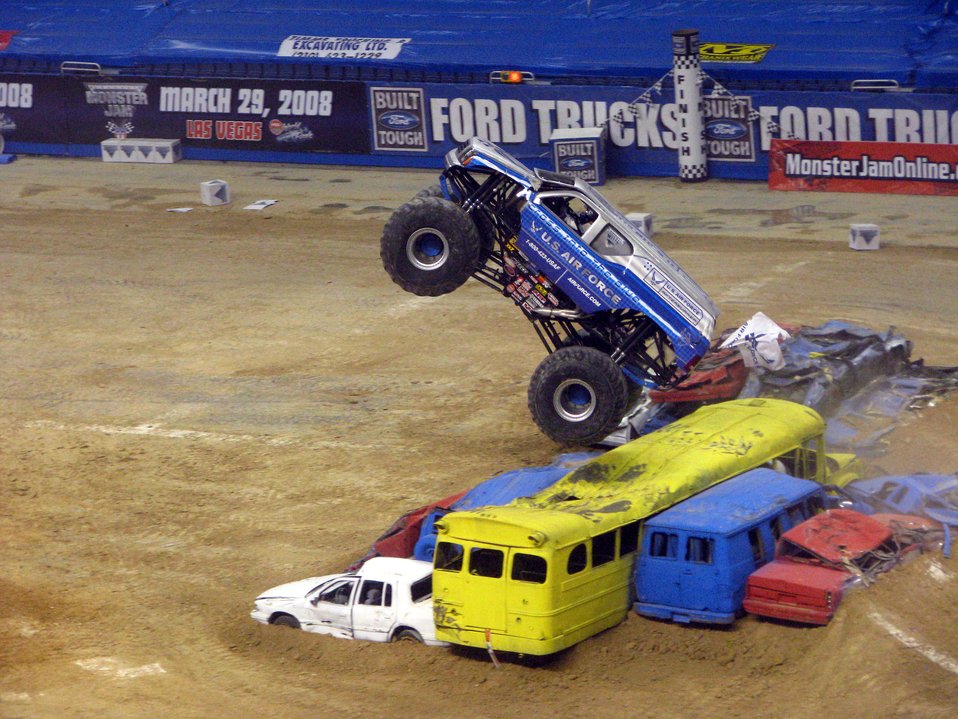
Afterburner steals the show

Afterburner, the Air Force's monster truck, goes airborne while dazzling the crowd Jan. 13 during the freestyle show at the 2008 San Antonio Monster Jam. Afterburner, an Air Force recruiting tool, is driven by Damon Bradshaw.